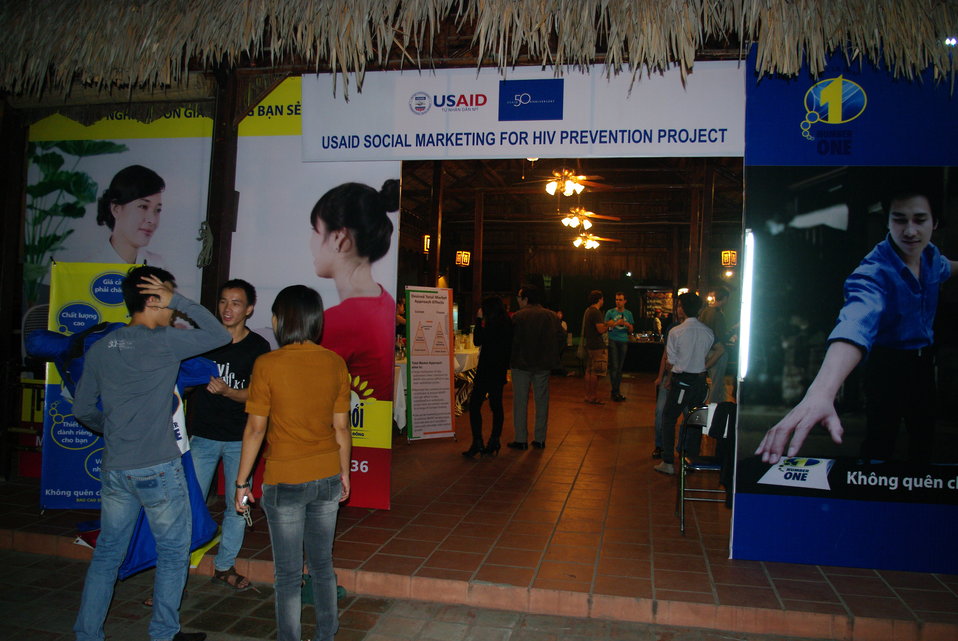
PEPFAR, U.S. Embassy Host Dengue Fever Concert in Hanoi